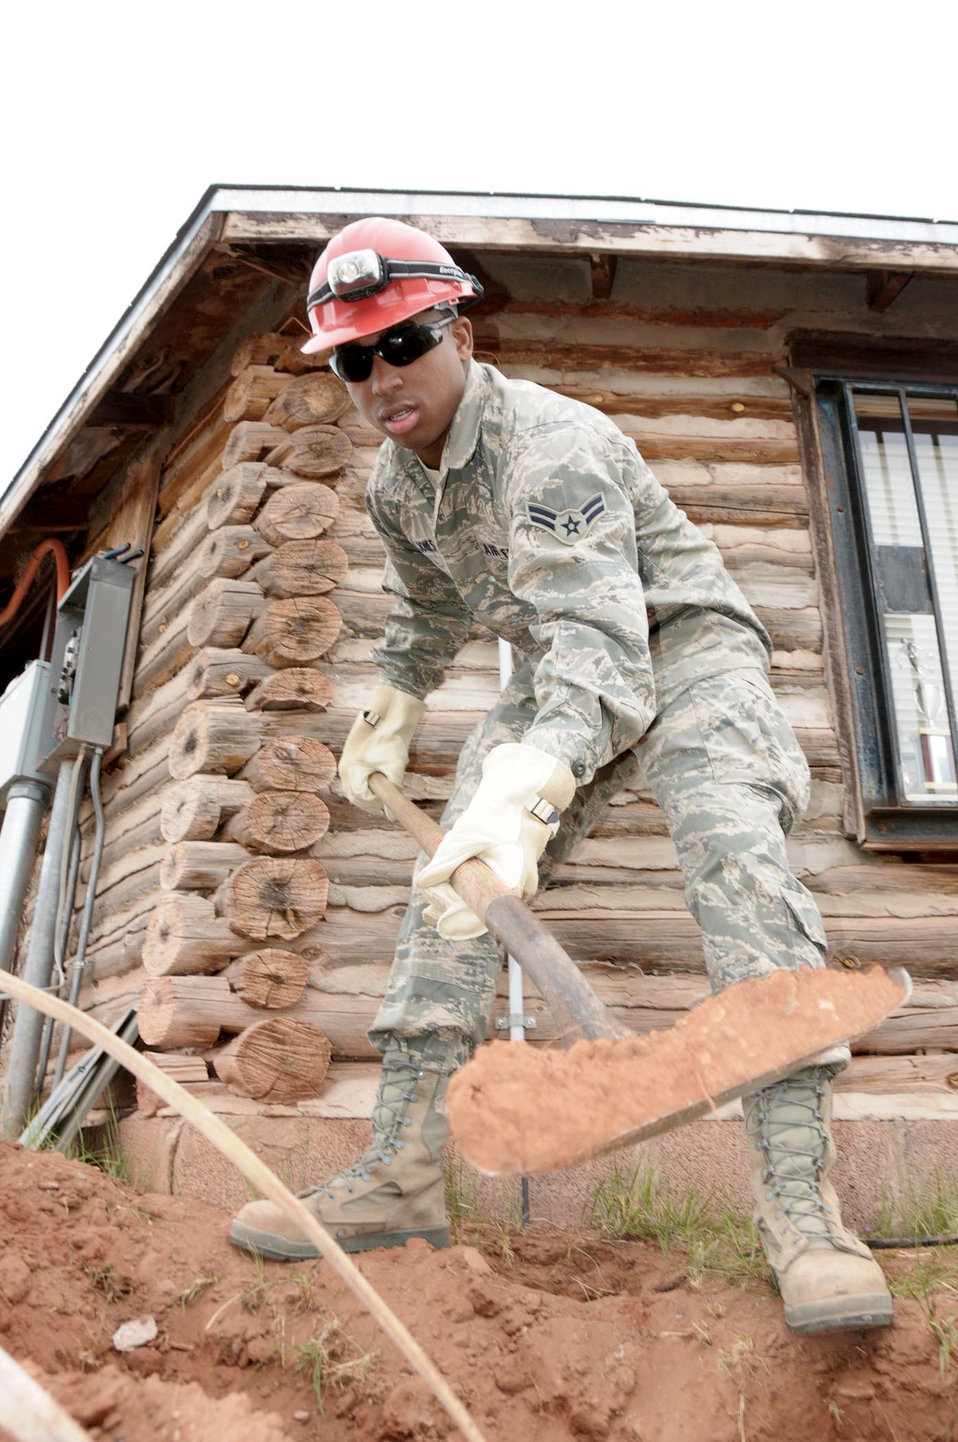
Navajo Nation

Airman 1st Class Avian Jones digs a trench for a power conduit May 18, 2010, at the St. Michaels Association for Special Education campus in Window Rock, Ariz. Work is being conducted at the SMASE campus as part of the Air Guard's Innovative Readiness Training, a civil-military affairs program linking military units with civilian communities for humanitarian projects. Airman Jones is a member of the Virginia Air National Guard's 203rd Red Horse Squadron.